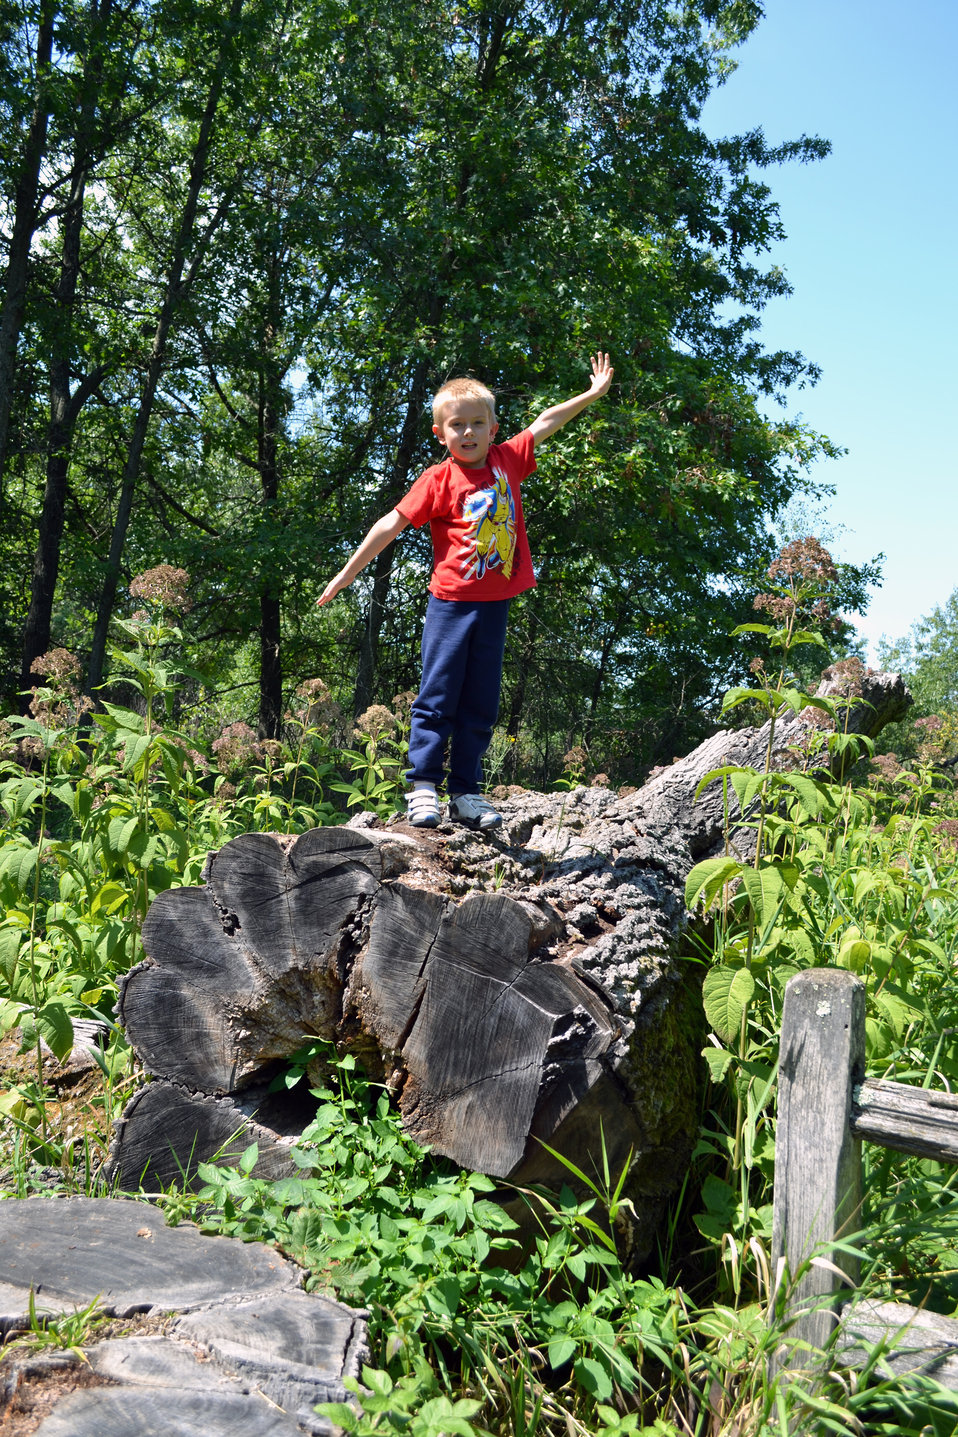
Exploring The Sentinel

Young explorer Kenny has fun visiting The Sentinel.